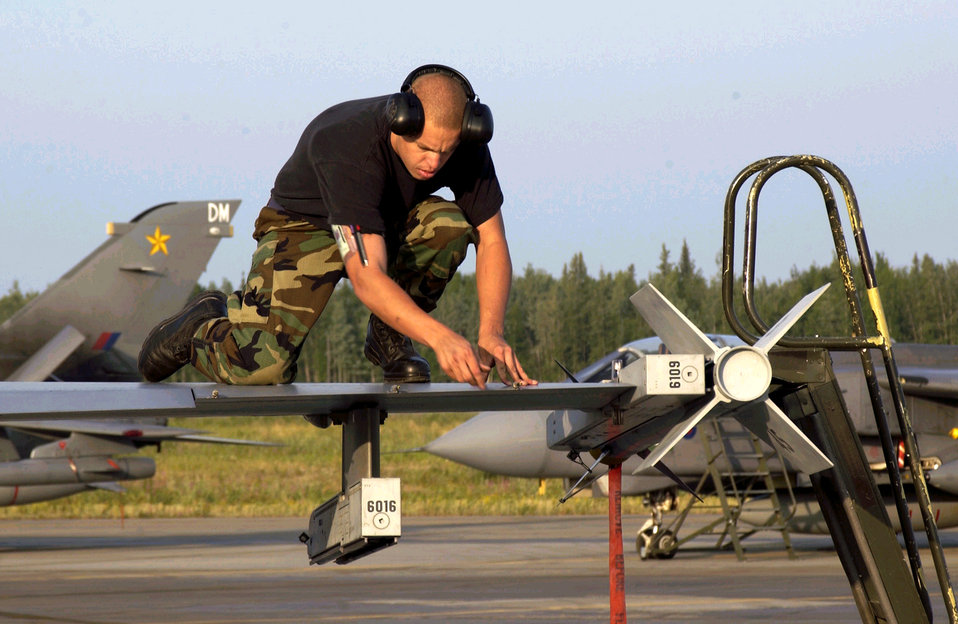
Tip of the falcon

EIELSON AIR FORCE BASE, Alaska -- Senior Airman Jason Ernst inspects a wing tip of an F-16 Fighting Falcon before a mission supporting operation Cooperative Cope Thunder on July 12. Airman Ernst is a crew chief with the California Air National Guard's 144th Fighter Wing in Fresno.